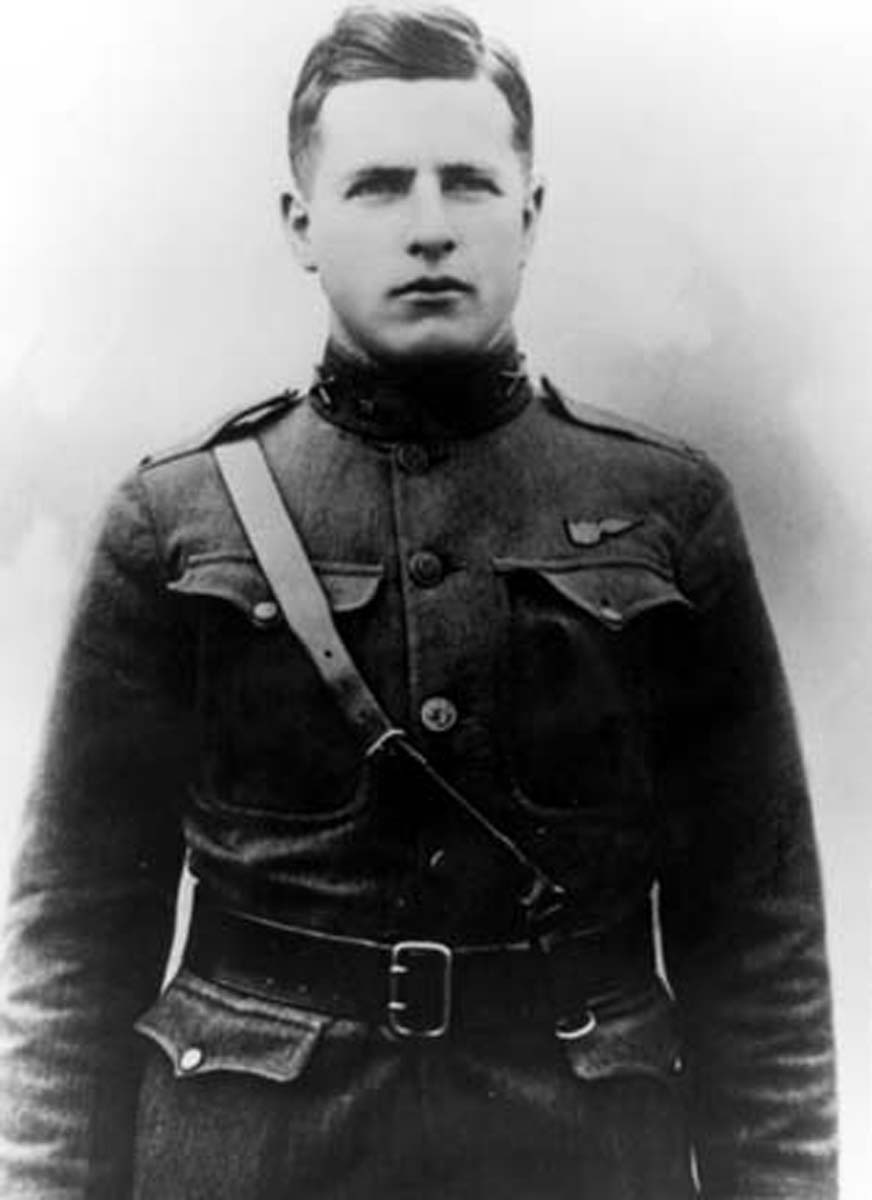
2nd Lt. Erwin R. Bleckley was posthumously awarded the Medal of Honor in December, 1922.